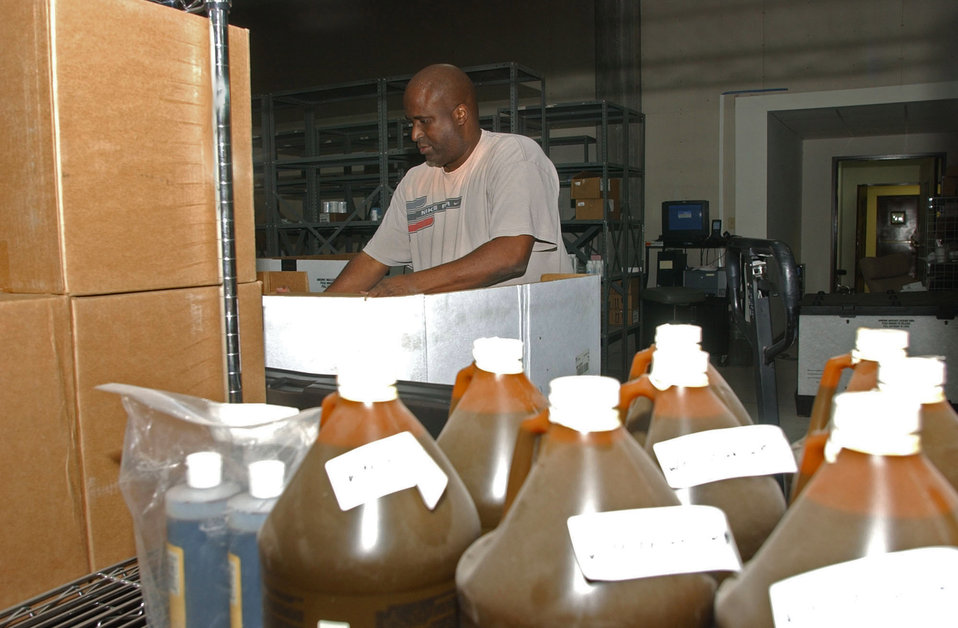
SOUTHCOM medics respond to Peru quake relief efforts

SOTO CANO AIR BASE, Honduras ? Master Sgt. Michael Freeman, Soto Cano Medical Element, packs supplies Aug. 16 for the Mobile Surgical Team?s deployment to Peru to assist with earthquake relief efforts.